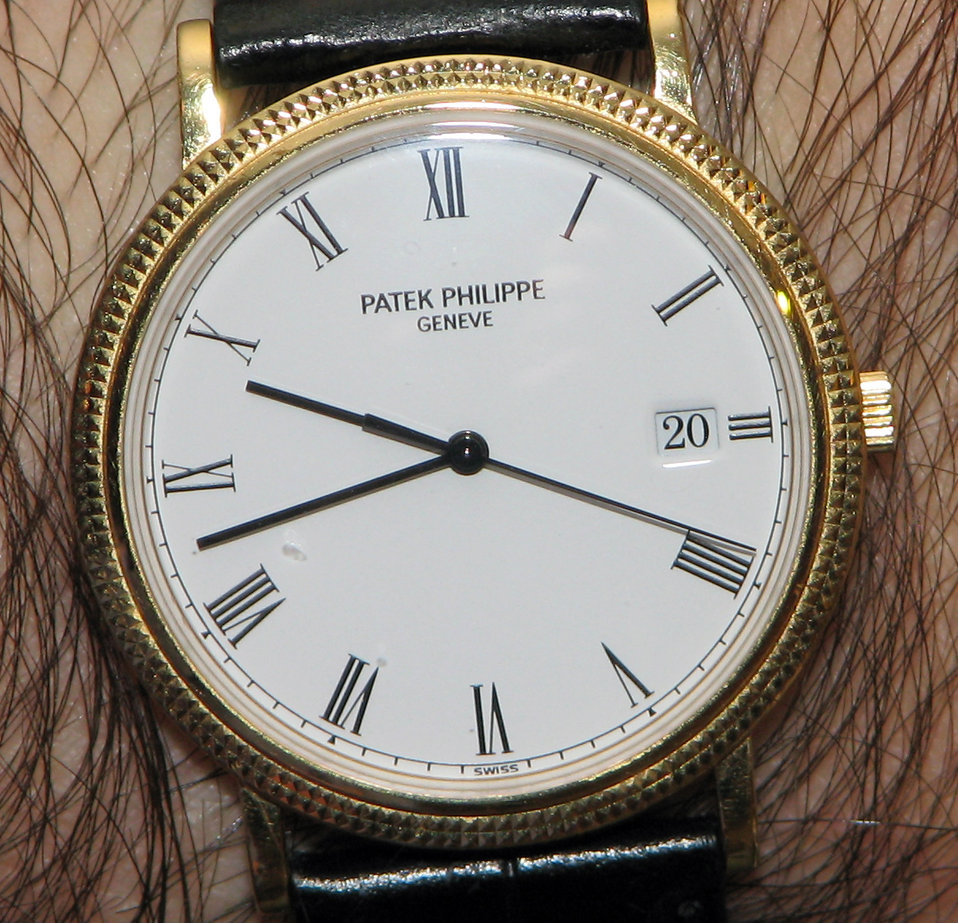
A circa 1999 men's quartz Calatrava, a dress watch built by the premier Swiss watchmaker Patek Philippe. It is in yellow gold, with a second hand and date